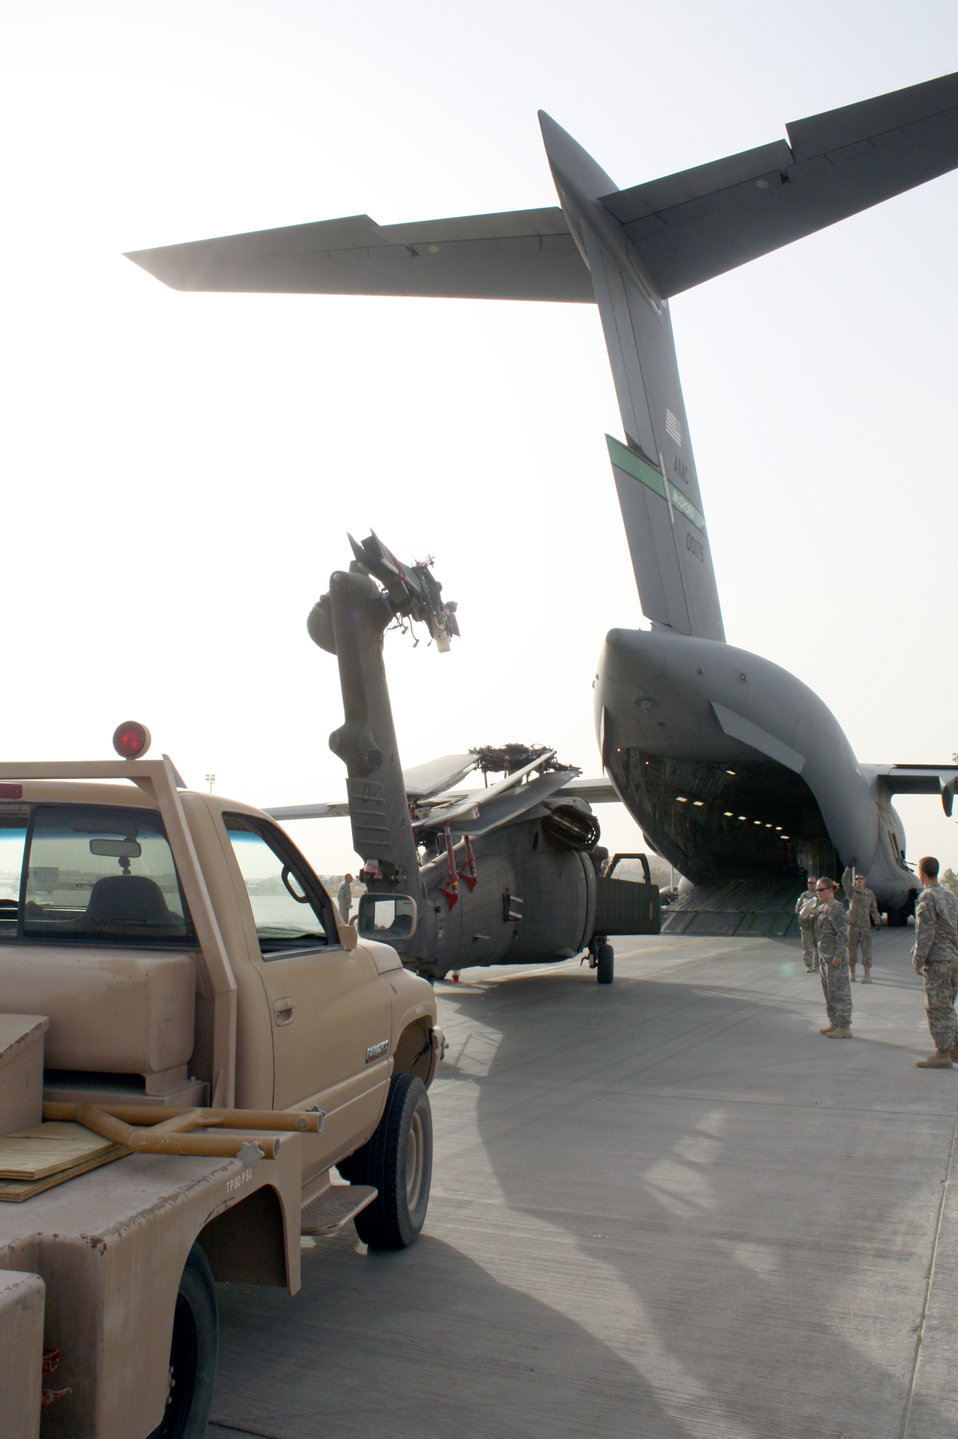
Balad Airmen move helicopters

An Army UH-60 Blackhawk helicopter is loaded onto a waiting C-17 Globemaster III for transport to locations in areas of higher priority July 12, 2010, at Joint Base Balad, Iraq. Approximately 70 helicopters have transitioned through JB Balad for redeployment of U.S. forces from Iraq.